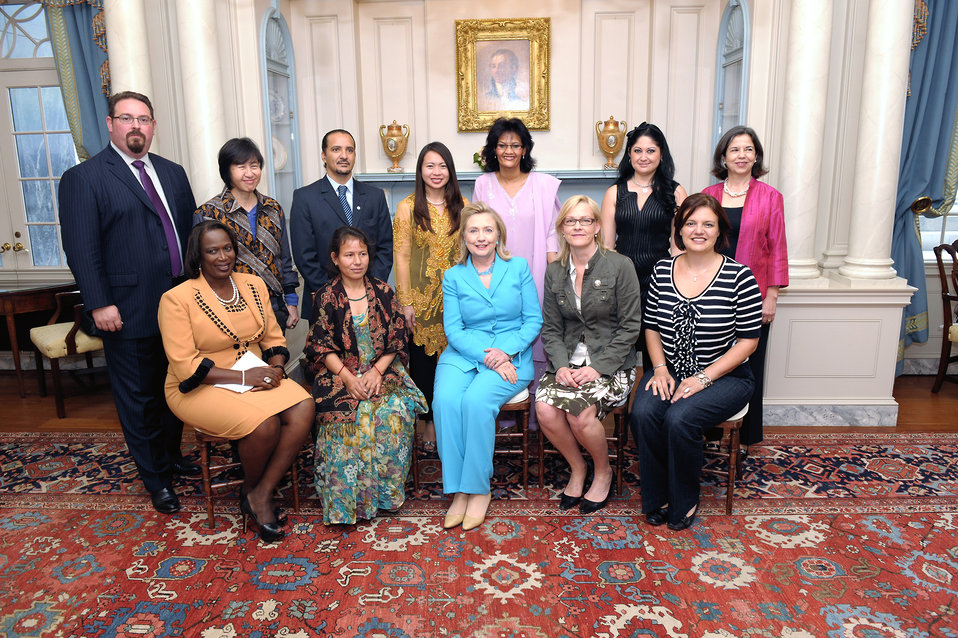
Secretary Clinton Meets With Trafficking in Persons Heroes

U.S. Secretary of State Hillary Rodham Clinton meets with the 2011 Trafficking in Persons Heroes, at the U.S. Department of State in Washington, D.C., on June 27, 2011.